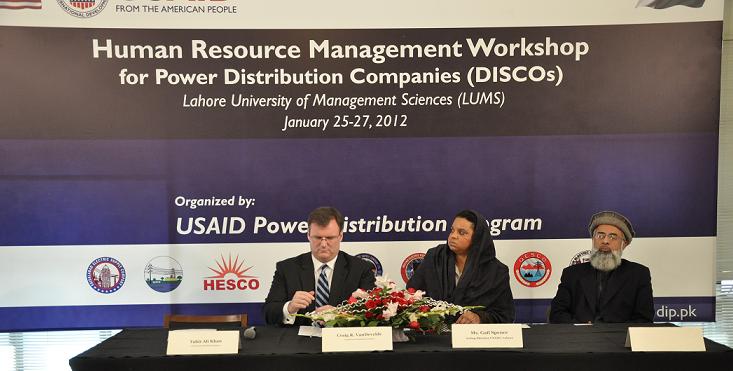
Recitation of Holy Quran